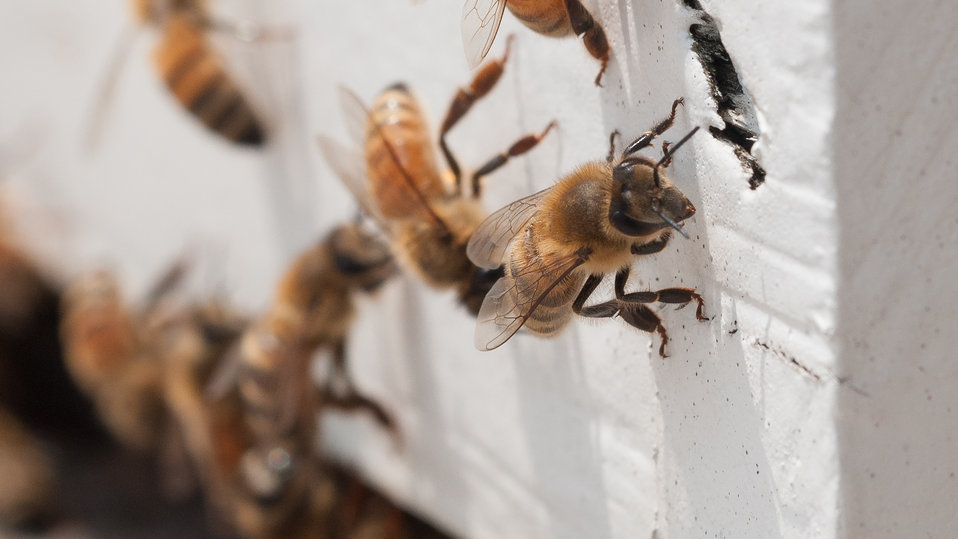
Honey bee with 'saddlebags' of pollen attached to thier hind legs return to the U.S. Department of Agriculture People's Garden apiary, atop the headquarters' Whitten Building in Washington, D.C., on Wednsday, May 22, 2013. The bees gather pollen from plants within about two miles to bring back to the hive for food. The activity of gathering from many flowers before returning moves pollen from plant to plant. Bees provide one of the several types pollination methods.